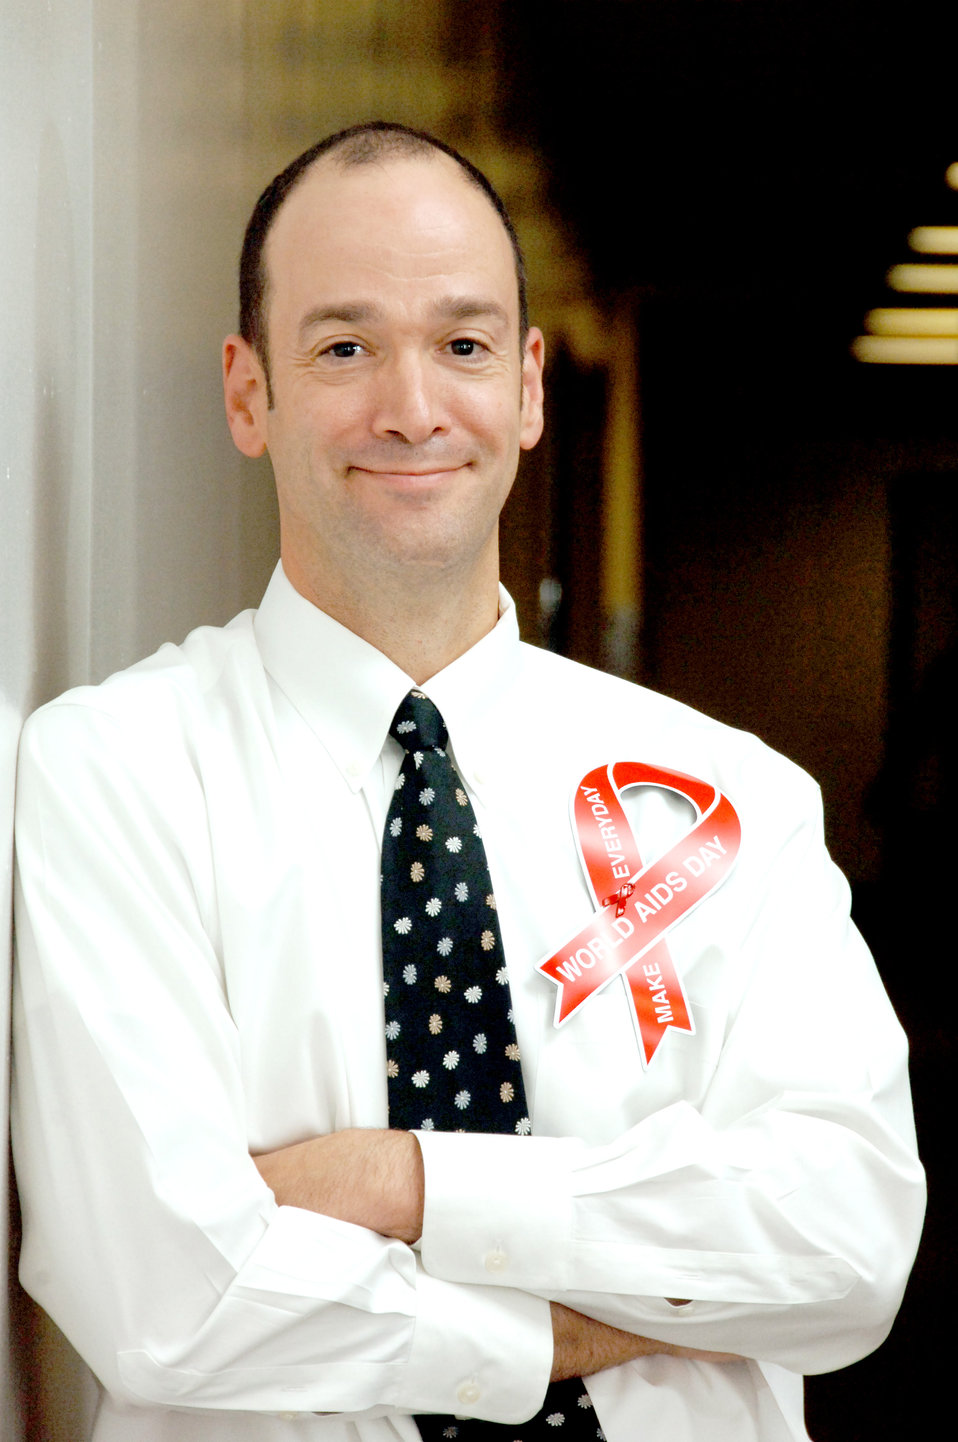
MG